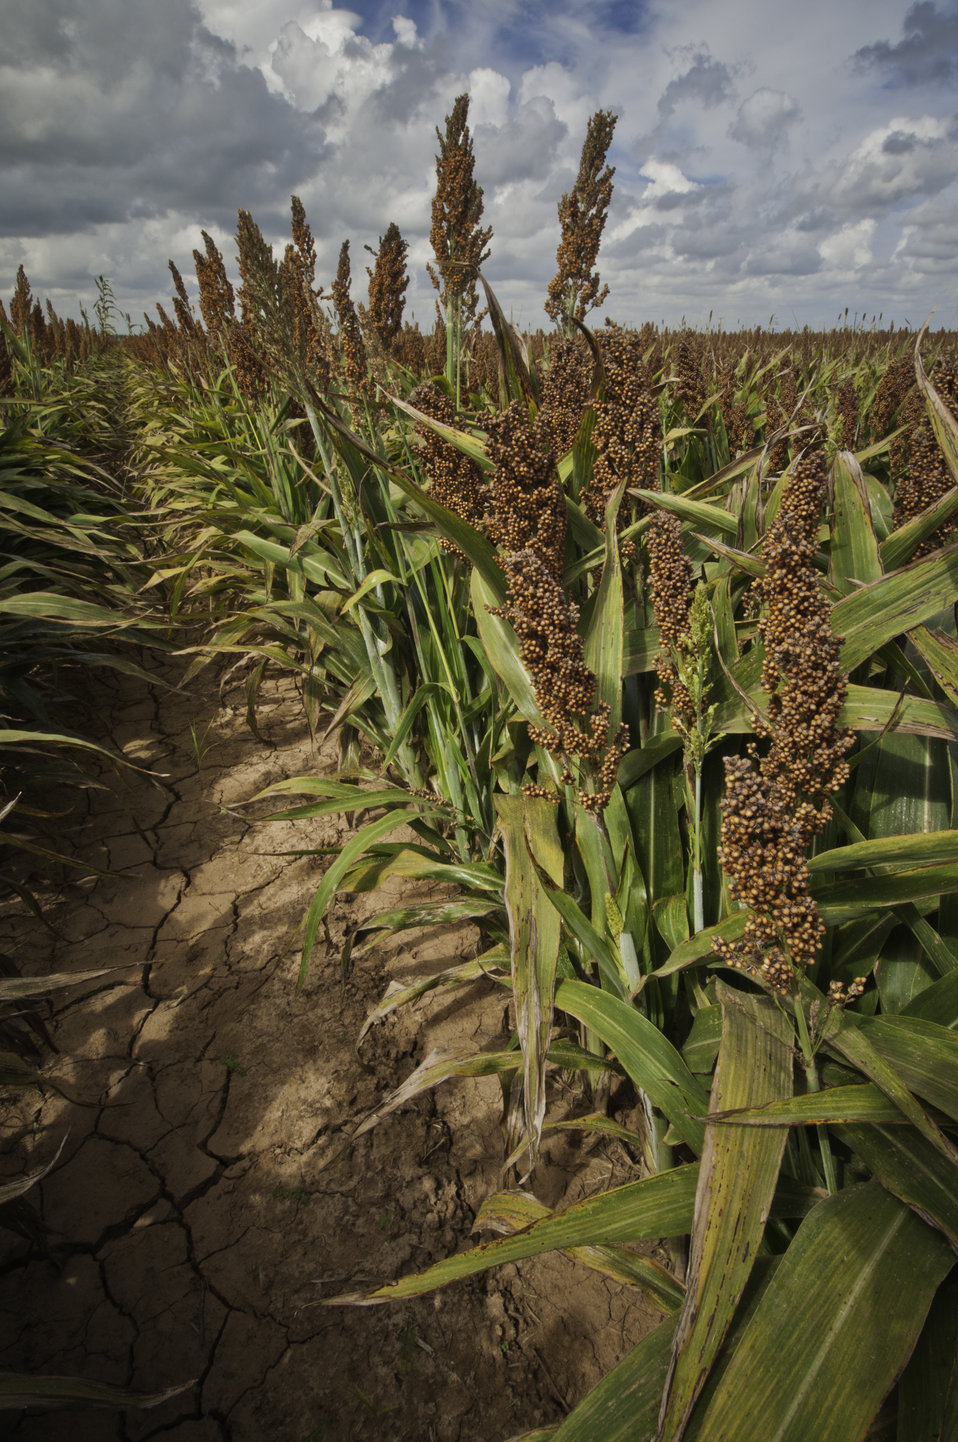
Grain sorghum grows on the Wilder Farms Navasota, TX on Aug. 23, 2013. The ground shows signs of the Texas drought but the crop shows no ill affects from the drought USDA photo by Bob Nichols.